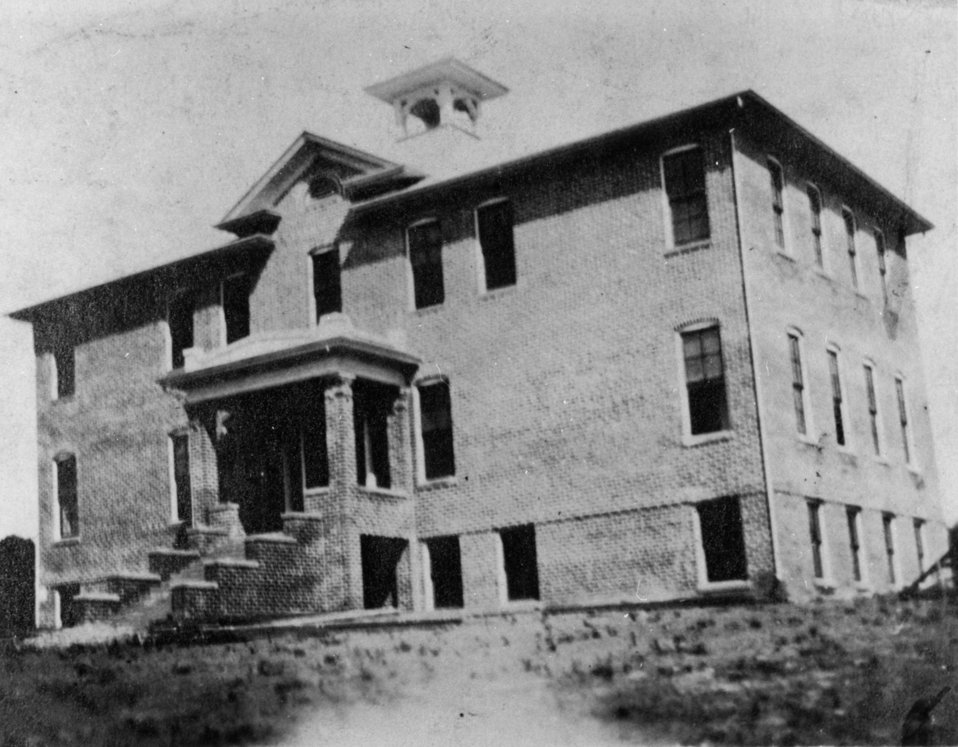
Early settlers at Oak Ridge